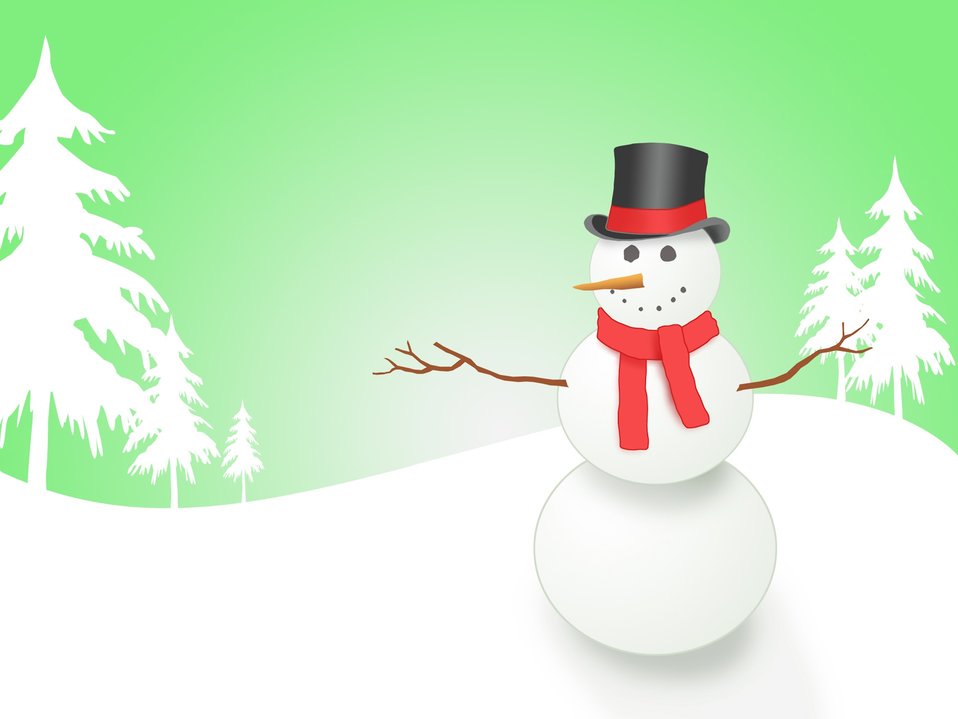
Snowman with trees

Illustration of snowman with snow covered trees.